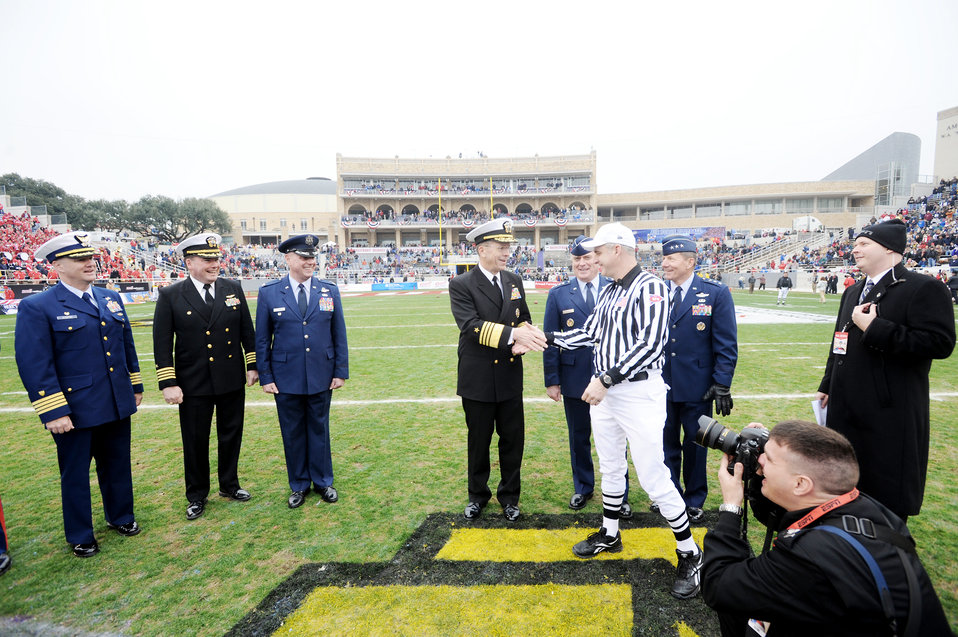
Armed Forces Bowl

Adm. Mike Mullen, chairman of the Joint Chiefs of Staff, greets the referee Dec. 31, 2009, prior to the coin toss for the Armed Forces Bowl game between the U.S. Air Force Academy and the University of Houston. Observing are Gen. Howie Chandler (beside Admiral Mullen), Air Force vice chief of staff, and Lt. Gen. Mike Gould (behind referee), superintendent of the Air Force Academy. The Falcons went on to defeat the Cougars 41-20.